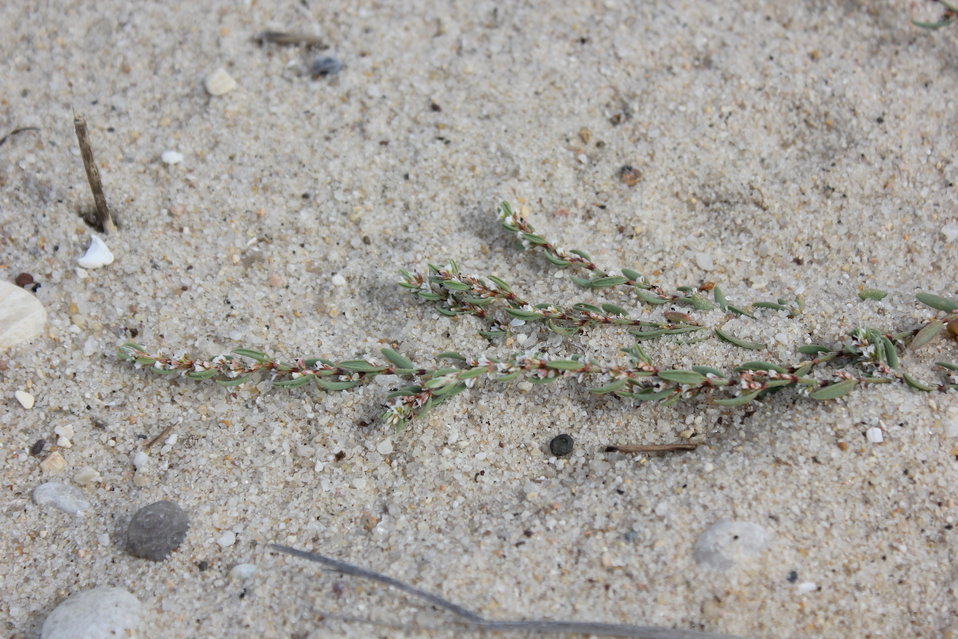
Seabeach Knotweed

Photographed at Wertheim National Wildlife Refuge.